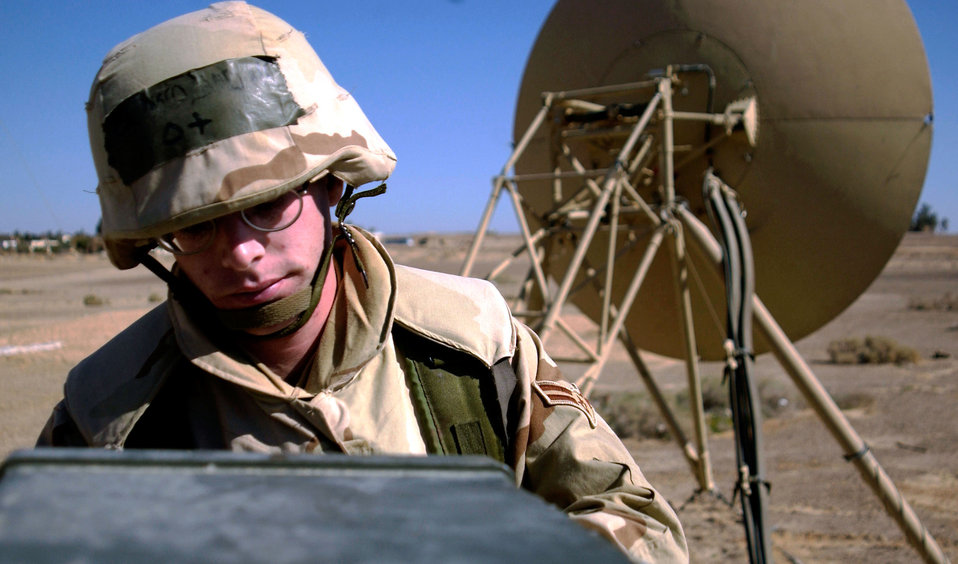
Tuning in

OPERATION IRAQI FREEDOM -- A Communications specialist, from the 410th Air Expeditionary Wing, adjusts equipment belonging to a mobile telecommunication center.